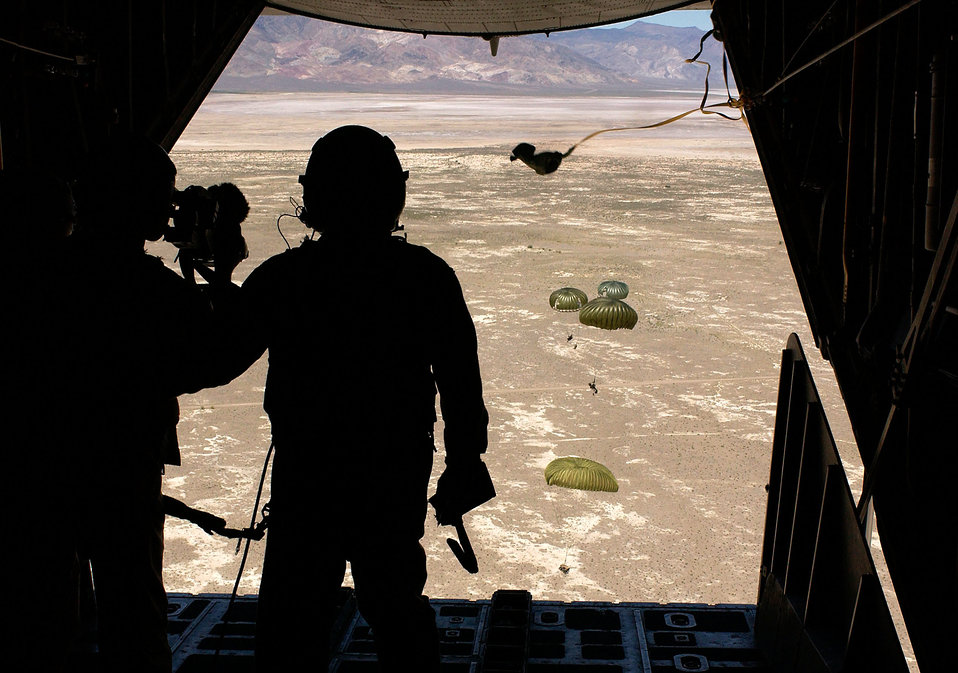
Desert Rescue XI

NAVAL AIR STATION FALLON, Nev. -- Air Force pararescuemen parachute from an HC-130 here during Desert Rescue XI on Aug. 11. The airmen are assigned to the 347th Rescue Wing at Moody Air Force Base, Ga. The joint-service combat search and rescue training exercise simulates downed aircrew behind enemy lines and allows airmen to practice rescue-related missions. They also experiment with new techniques in realistic scenarios.